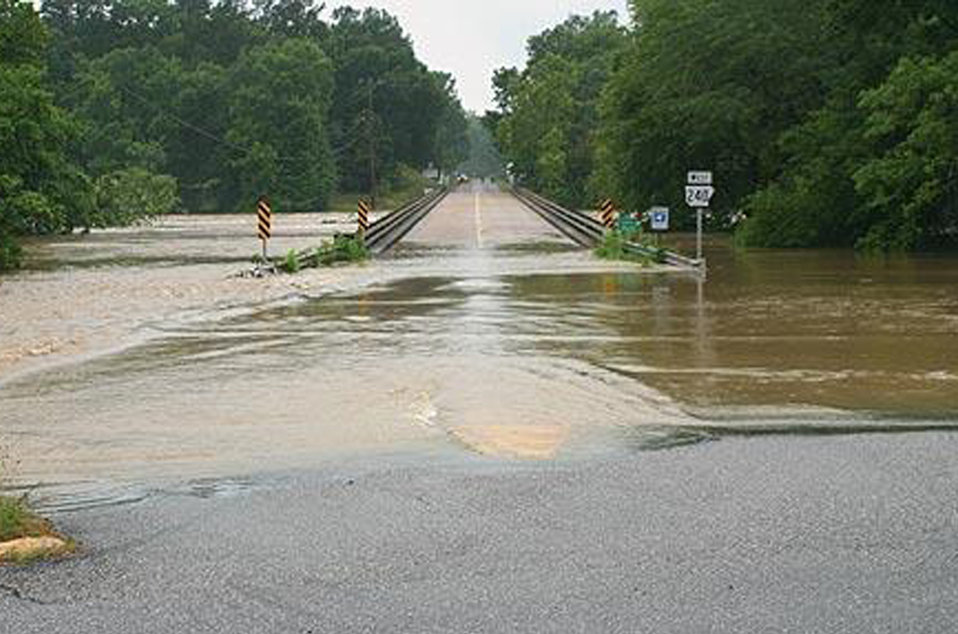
Arkansas Flood Photo of a Flooded Street